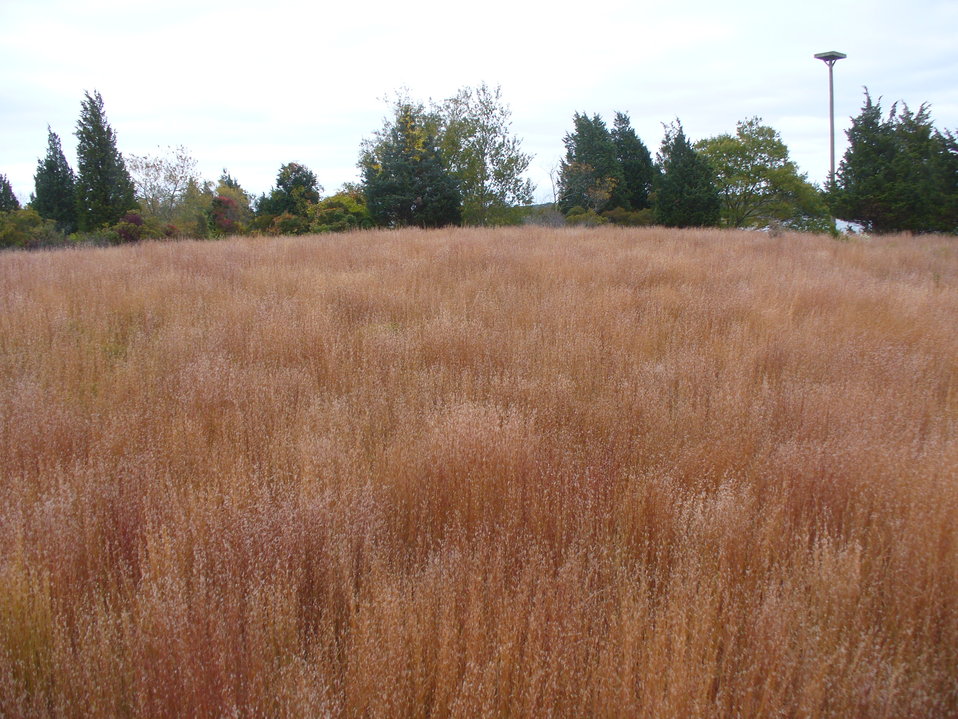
Maritime Grassland

Photographed at Wertheim National Wildlife Refuge.